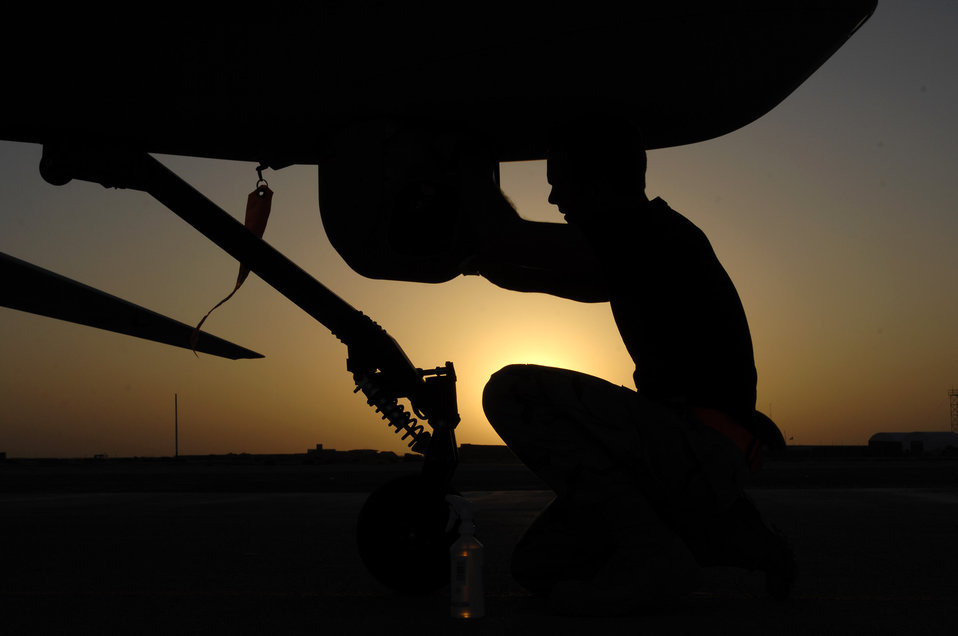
Nighttime Predator

Airman 1st Class Justin Cole cleans the front sensor of an MQ-1 Predator Unmanned Aerial Vehicle Nov. 5 at Ali Base, Iraq. The Predators are now fully operational and have begun 24-hour operations. Airman Cole is deployed from Creech Air Force Base, Nev.